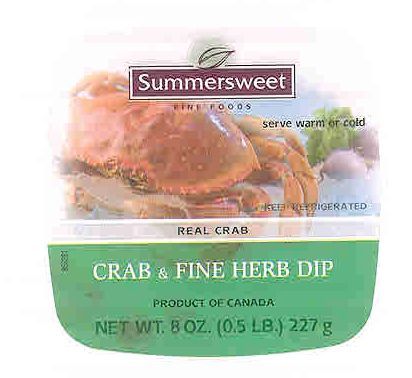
RECALLED - Dip and Mousse

April 15, 2011 - Product Recall - Charcuterie La Tour Eiffel Recalls Mousses and Dips.